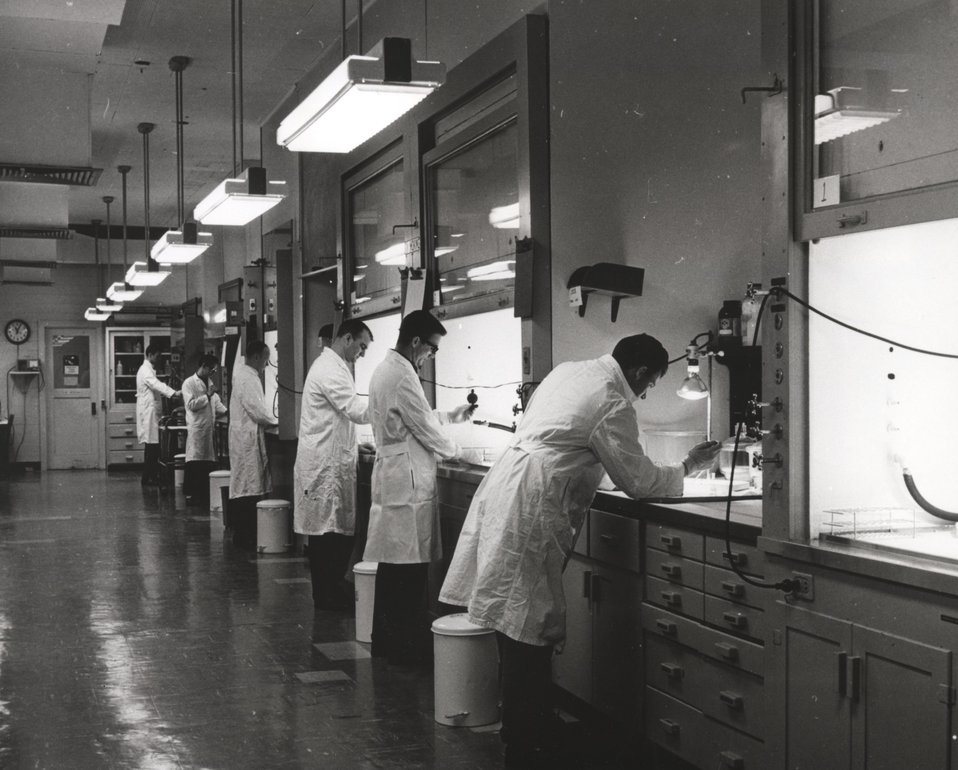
Radiochemistry laboratory in the Special Training Division of Oak Ridge Associated Universities. c. 1970